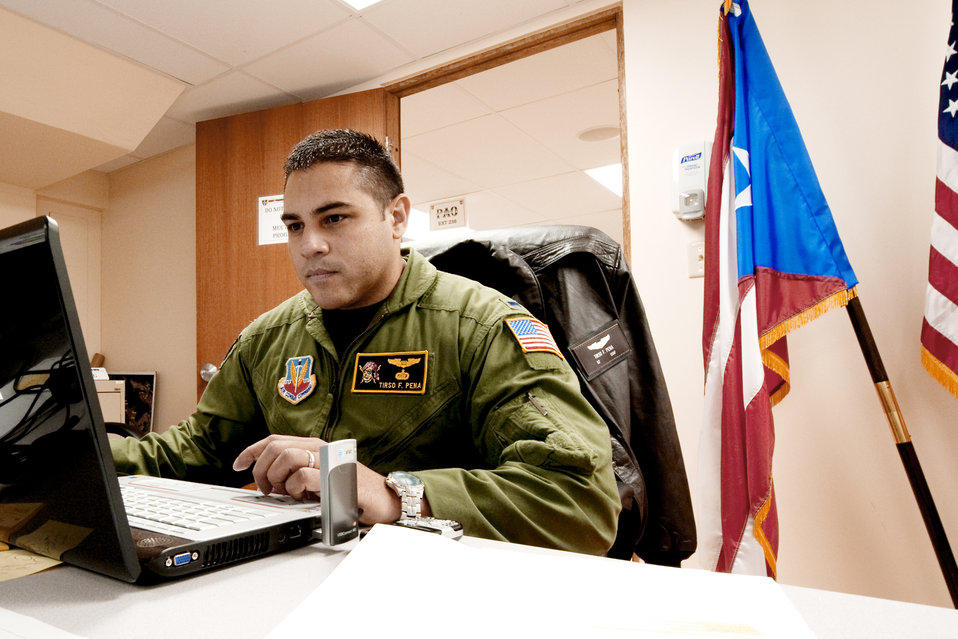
PRNG uses chat room to relay information about earthquake

1st Lt. Tirso Peña monitors a chat room Jan. 20, 2010, at the Puerto Rico National Guard joint operations center in San Juan, P.R. Multiple military units use the chat room to transmit information about the Haitian earthquake relief efforts. Lieutenant Peña is a navigator assigned to the Puerto Rico Air National Guard's 156th Airlift Squadron.